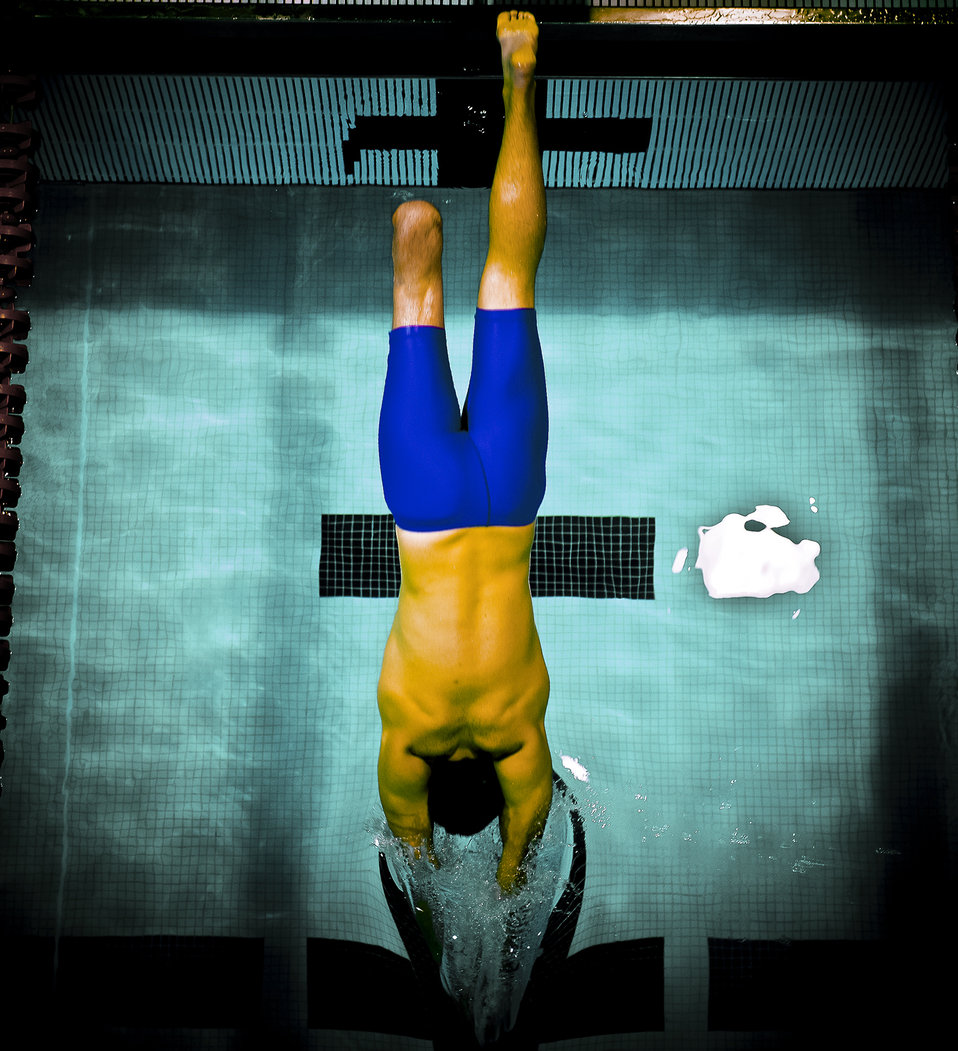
1st Lt. Ryan McGuire dives into the pool to compete in the 100m freestyle where he earned the bronze medal during the Warrior Games May 12, 2010, in Colorado Springs, Colo.